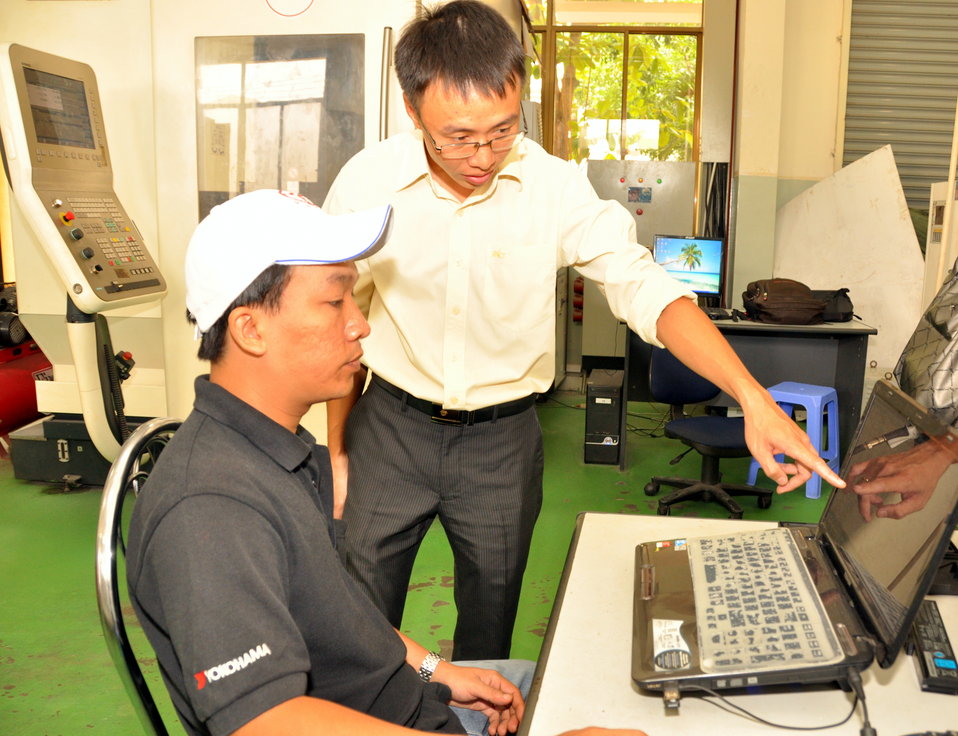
Ho Chi Minh Vocational College of Technology

Vu The Manh, lecturer of Mechanical Engineering Faculty at the Ho Chi Minh Vocational College of Technology

Photo: January 11, 2013, Richard Nyberg @USAIDVietnam